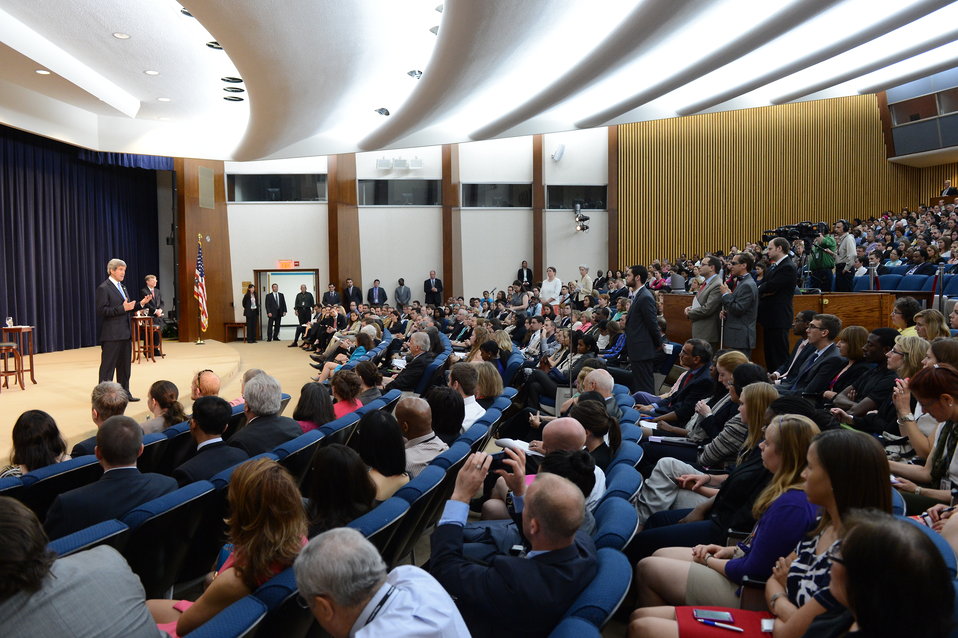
Secretary Kerry Responds to a State Department Employee's Question

U.S. Secretary of State John Kerry responds to a question from a Department employee during a town hall meeting at the U.S. Department of State in Washington, D.C., on May 30, 2013.